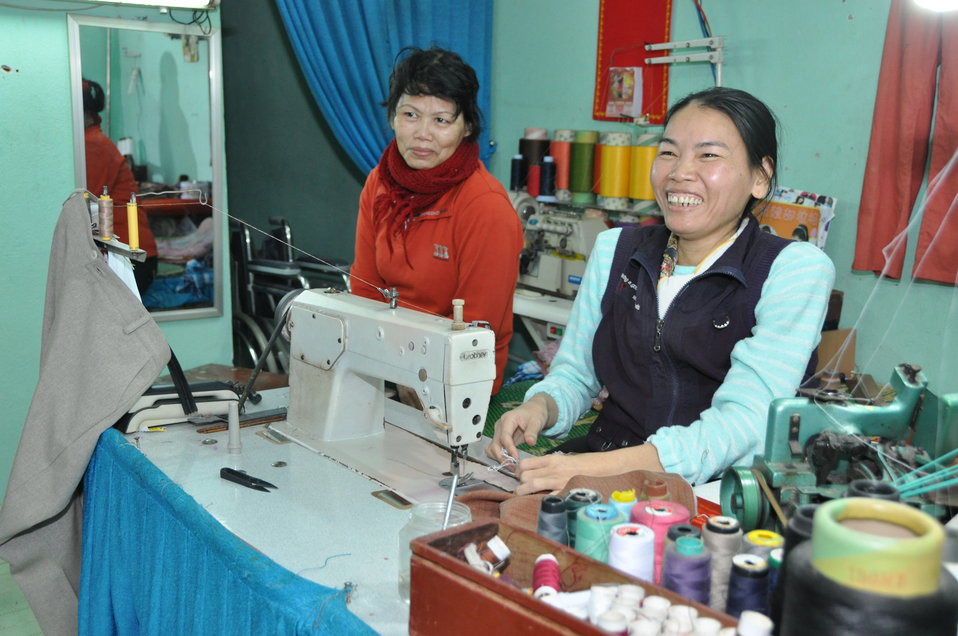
Le Thi Het receives support to boost her income from sewing.

Ms. Le Thi Het received a USAID funded wheelchair and regular physical therapy services as part of a three-year project in Danang.